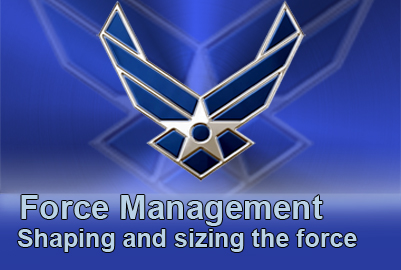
Force Management